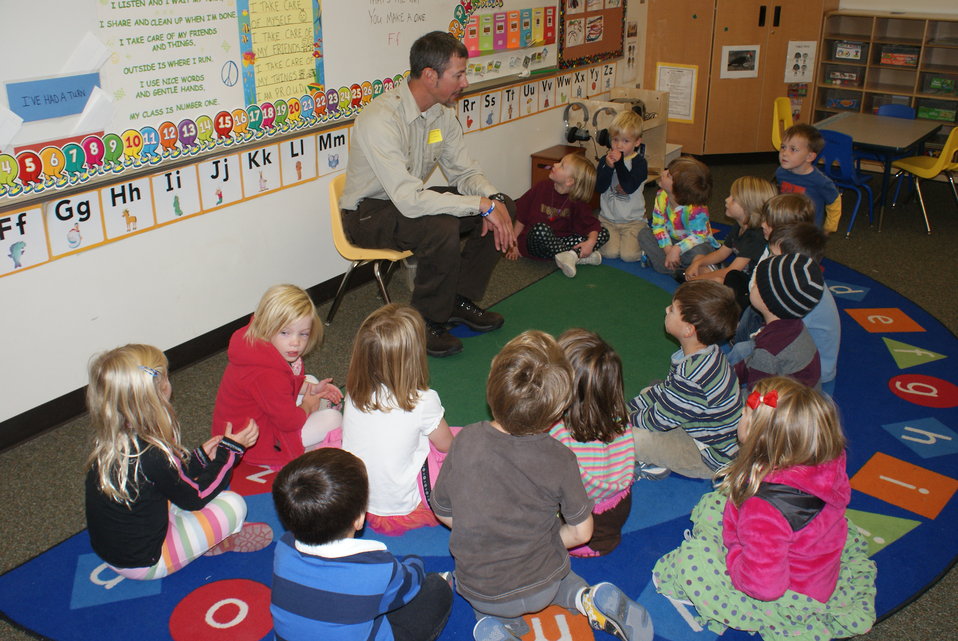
Scientists in the Community Program

U.S. Fish and Wildlife Service Mountain-Prairie Region Deputy ARD for External Affairs, Matt Kales, introduces early childhood education students at William Roberts Elementary School in Denver to some of Colorado's native and historic wildlife species.